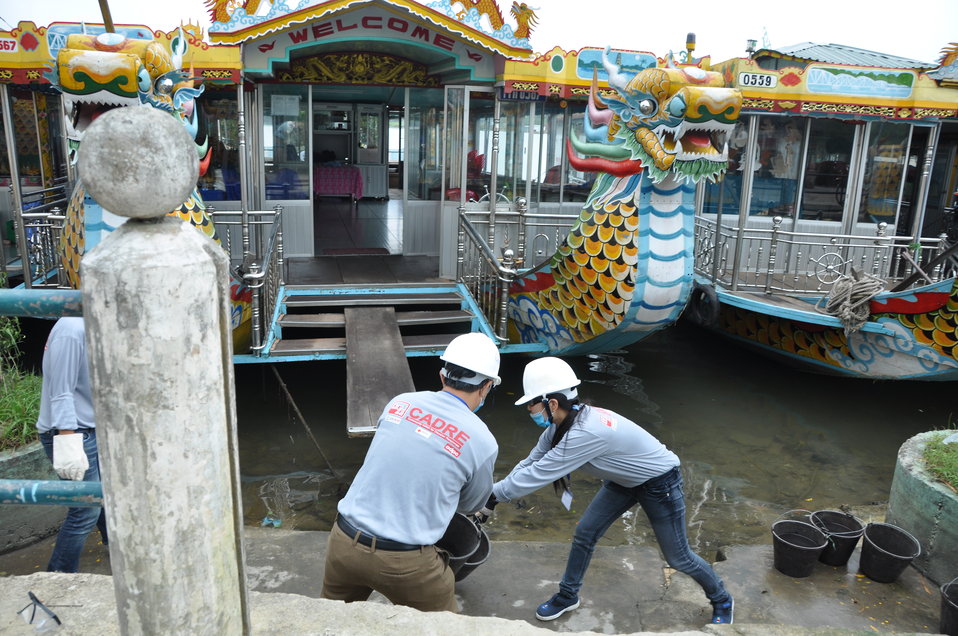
Disaster and Emergency Training Funded by USAID in Hue, Vietnam